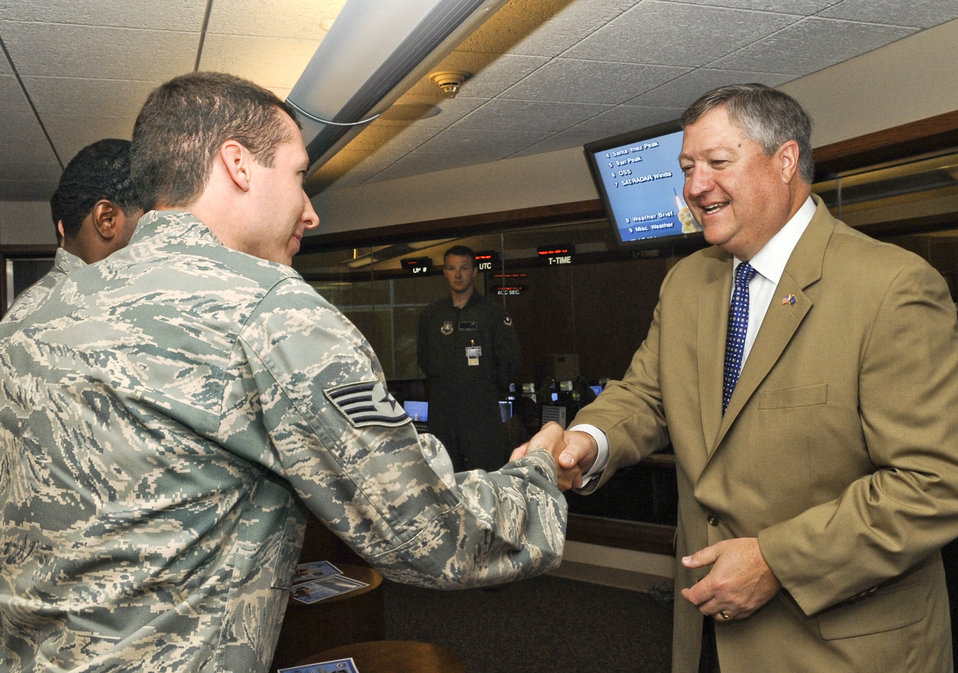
SecAF discusses Minuteman III, space at Vandenberg

Secretary of the Air Force Michael Donley shakes hands with Airmen June 15, 2010, during a tour of the Vandenberg Air Force Base, Calif. During his visit, Secretary Donley met with base leadership, toured facilities and observed a Minuteman III launch, the first under Air Force Global Strike Command.